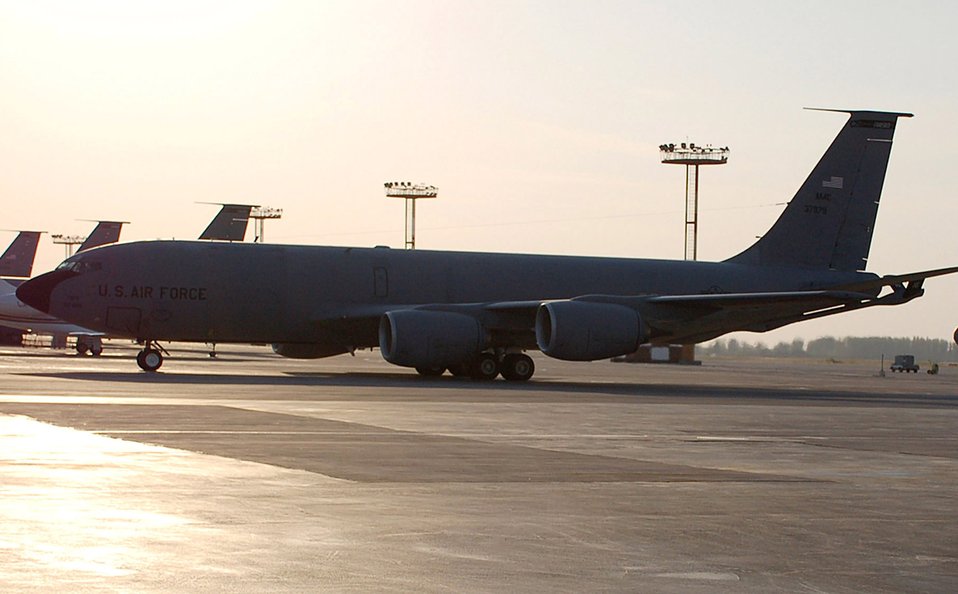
Stratotanker celebrates 51 years of military service

A KC-135 Stratotanker assigned to Fairchild AFB, Wash., taxies back in from a refueling mission down range Aug. 29 at Manas Air Base, Kyrgyzstan. KC-135s have been in service for the Air Force for 51 years.